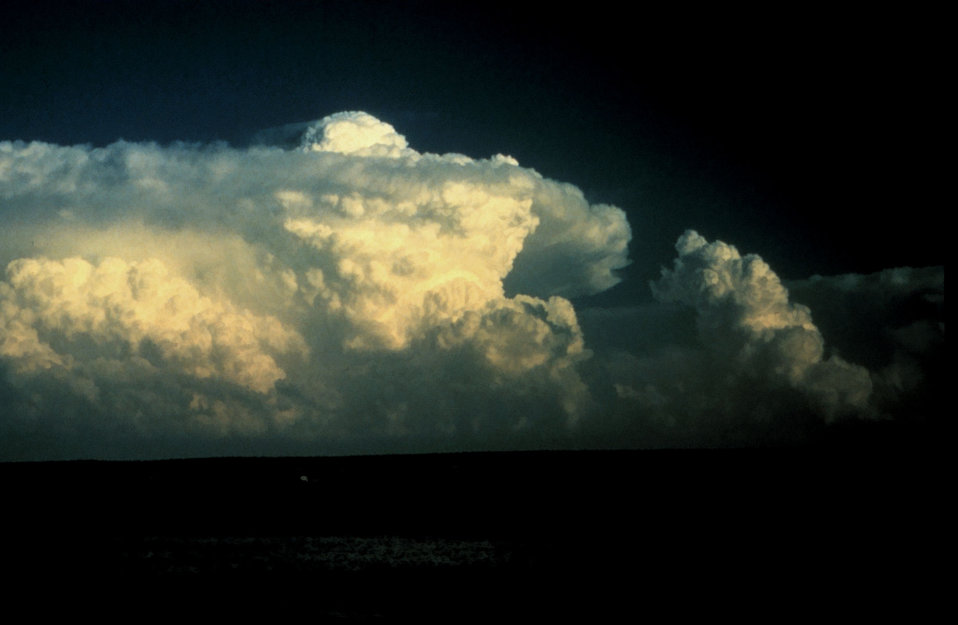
Cumulonimbus